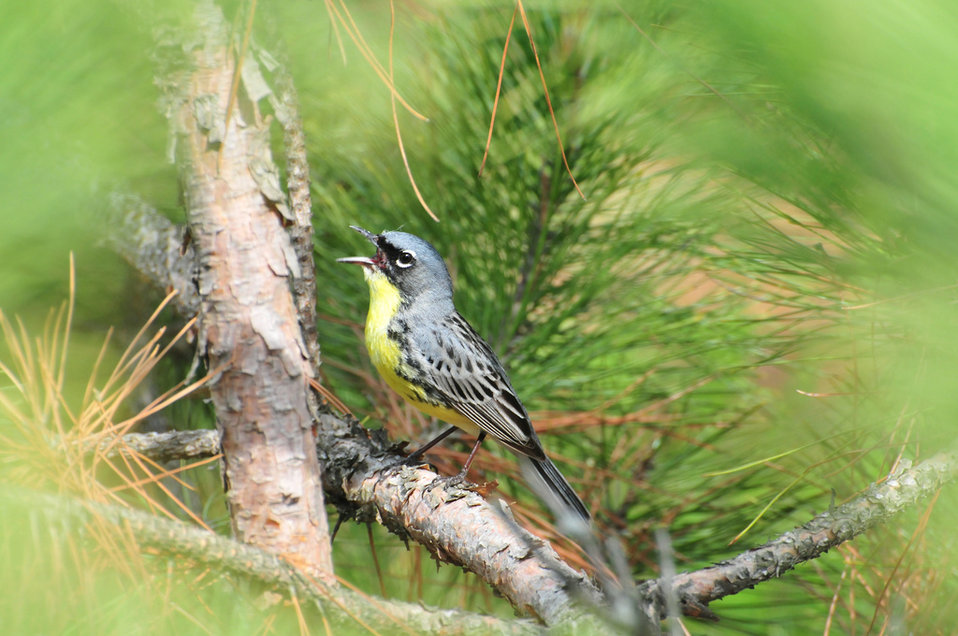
Endangered Kirtland's warbler (Dendroica kirtlandii)

Learn about the historical importance of fire in managing healthy jack pine forests in Michigan, which the endangered Kirtland’s warbler depends: www.fws.gov/endangered/news/episodes/bu-10-2011/kirtlands...